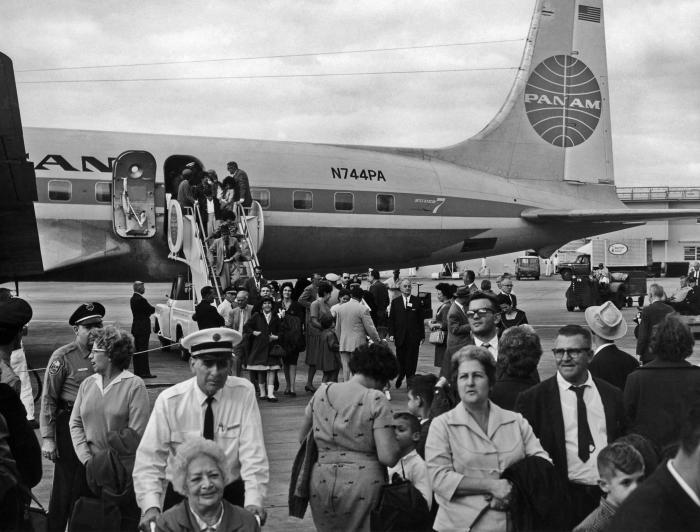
This photograph shows numerous Cuban citizens arriving in Miami, Florida after being airlifted from Cuba in 1965. The U.S. Public Health Service oversaw all immunizations of these individuals upon their arrival into the United States.